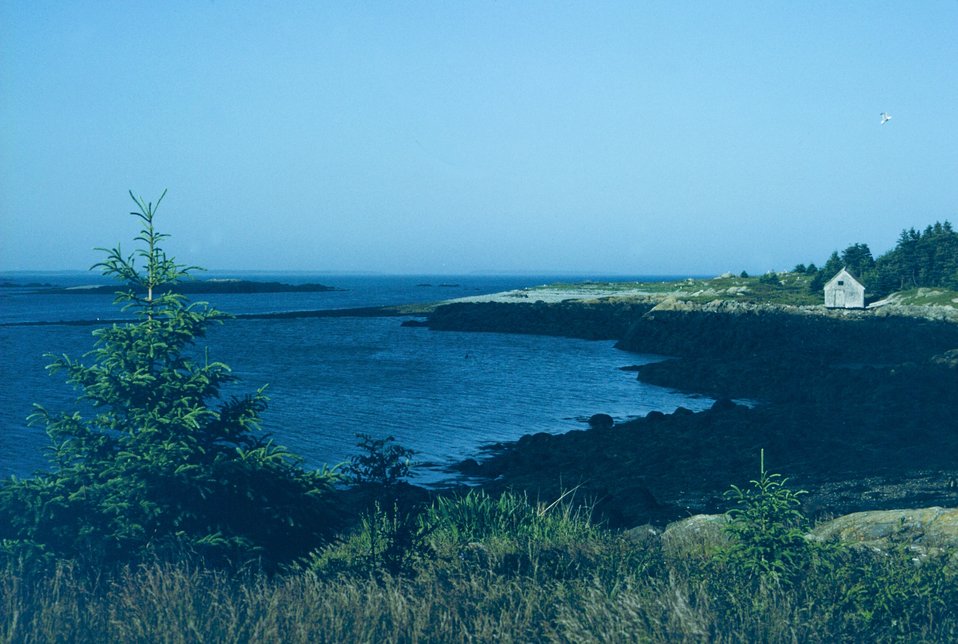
Near Coast Guard Base at Passamaquoddy Bay.